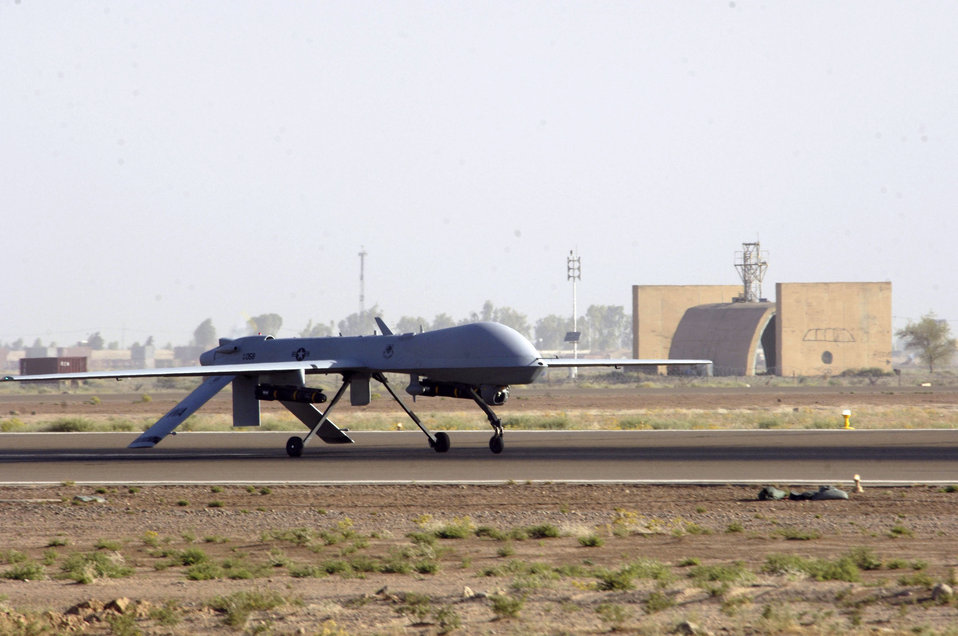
Unmanned engagement

An MQ-1 Predator unmanned aerial vehicle taxis down the runway at Balad Air Base, Iraq, on Wednesday, June 14. The Predator can employ two laser-guided Hellfire anti-tank missiles.